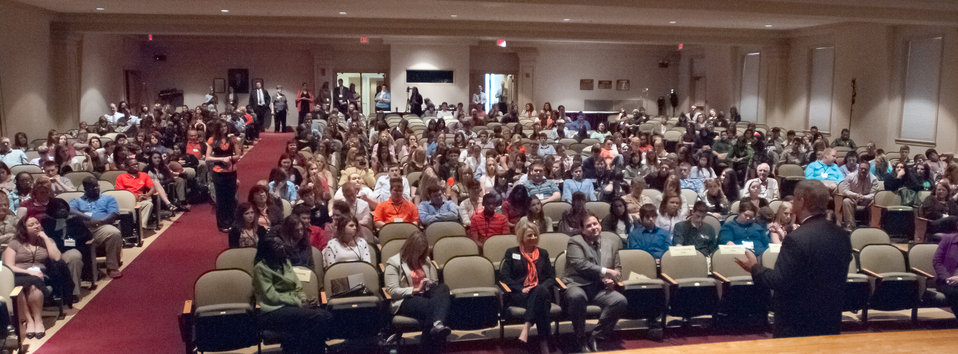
Agriculture Secretary Tom Vilsack answer a question from Kansas State University student Jill Seiler (stnading in left aisle) at the National 4-H Youth Center in Chevy Chase, MD, on Monday, March 26, 2012. 'For almost 100 years, USDA and 4-H have partnered to produce some of our nation's best and brightest, including farmers and ranchers who have supported the American economy and put food on our tables,' Vilsack said. 'You all are tomorrow's leaders. We need you to think big, innovate and help tackle the important challenges standing between us, a stronger middle class and a stronger nation.'